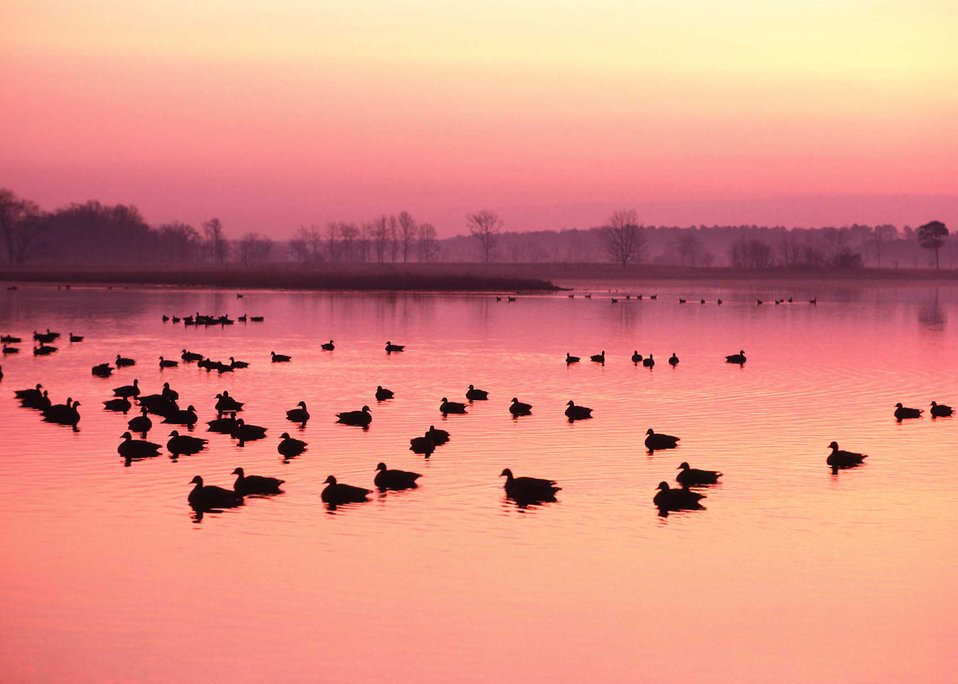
Canadian geese rest confortably in wetlands on Maryland's Eastern Shore.